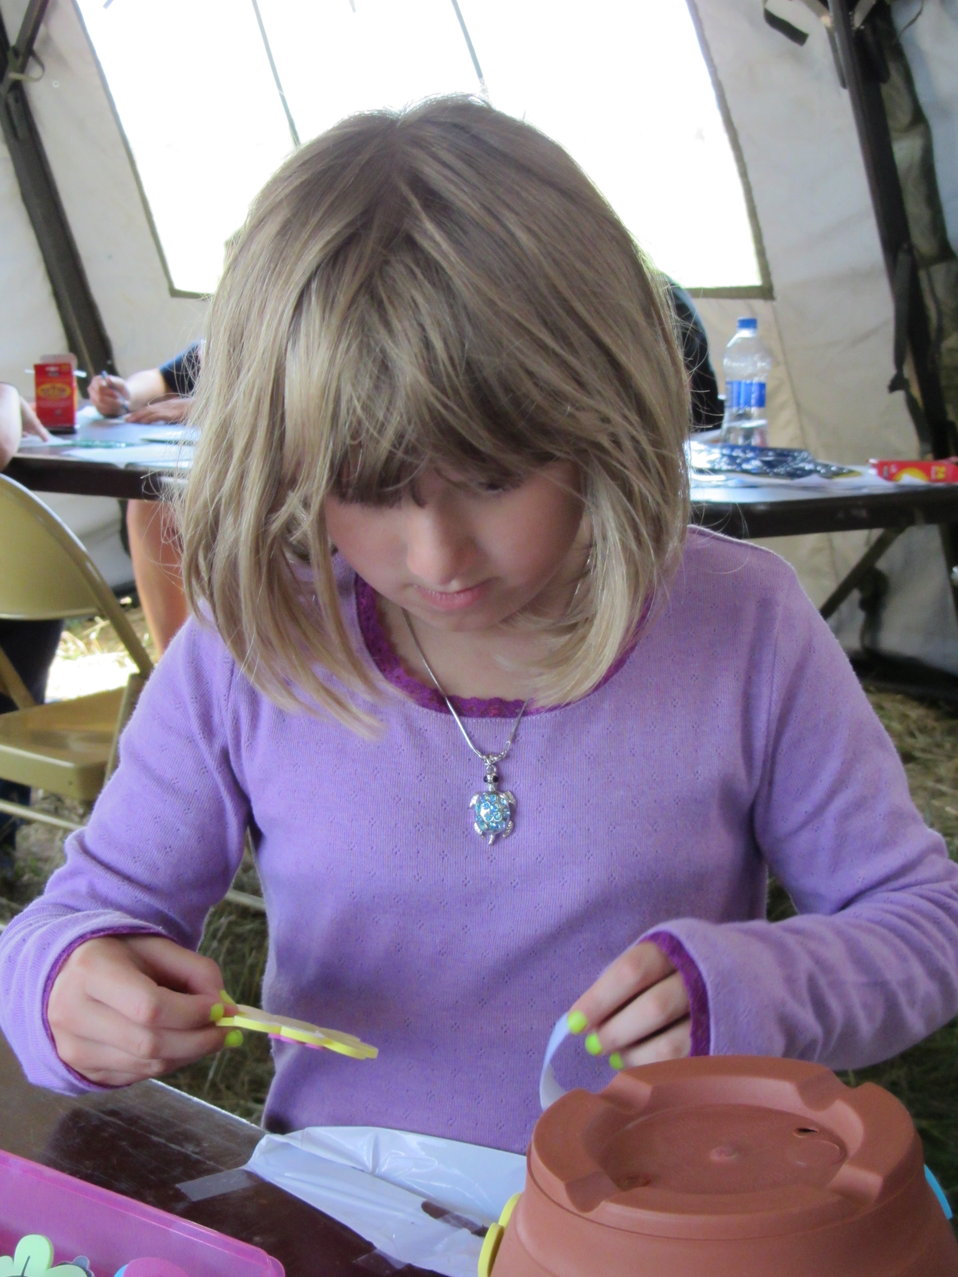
2011 Huron Prairie Fest

The 'Create your own Toadhouse' was a huge hit for kids in the craft tent.